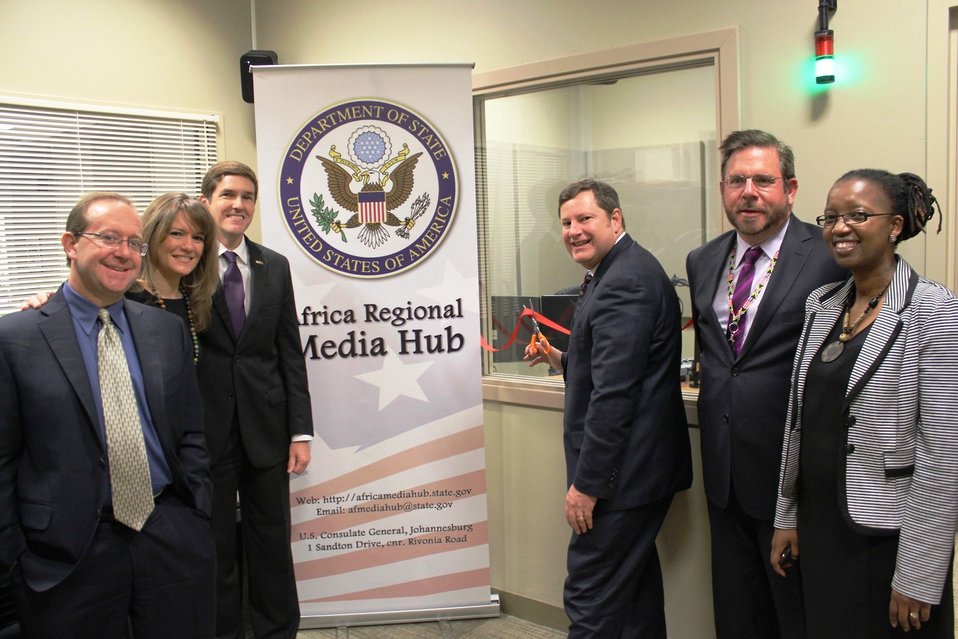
Assistant Secretary Hammer Launches the New Location of the Africa Regional Media Hub

Assistant Secretary of State for Public Affairs Mike Hammer cuts the ribbon at the launch of the new location of the Africa Regional Media Hub in Johannesburg, South Africa, November 2, 2012.